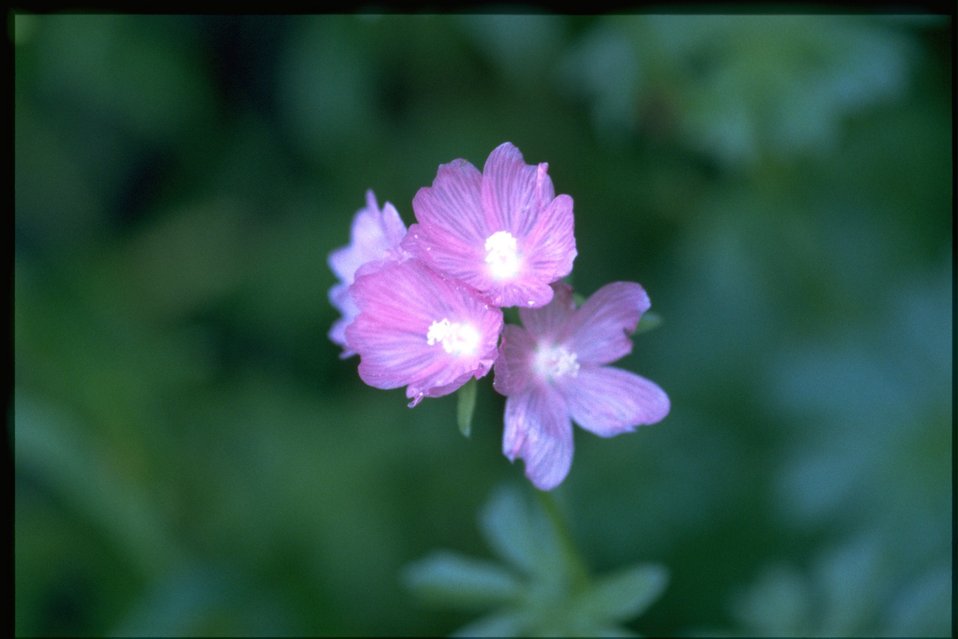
Medium shot of Rubus parviflorus.